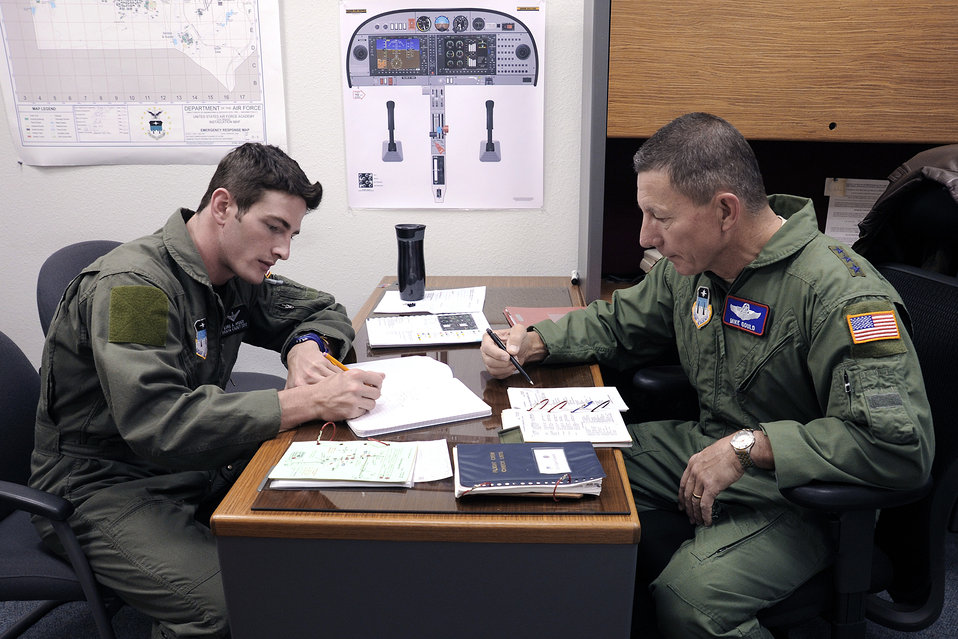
T-52A training flight

Lt. Gen. Mike Gould and Cadet 1st Class Luke Hyder go through a pre-flight briefing before a local training flight in a T-52A April 15, 2010, on the airfield at the U.S. Air Force Academy, Colo. General Gould is the U.S. Air Force Academy superintendent.